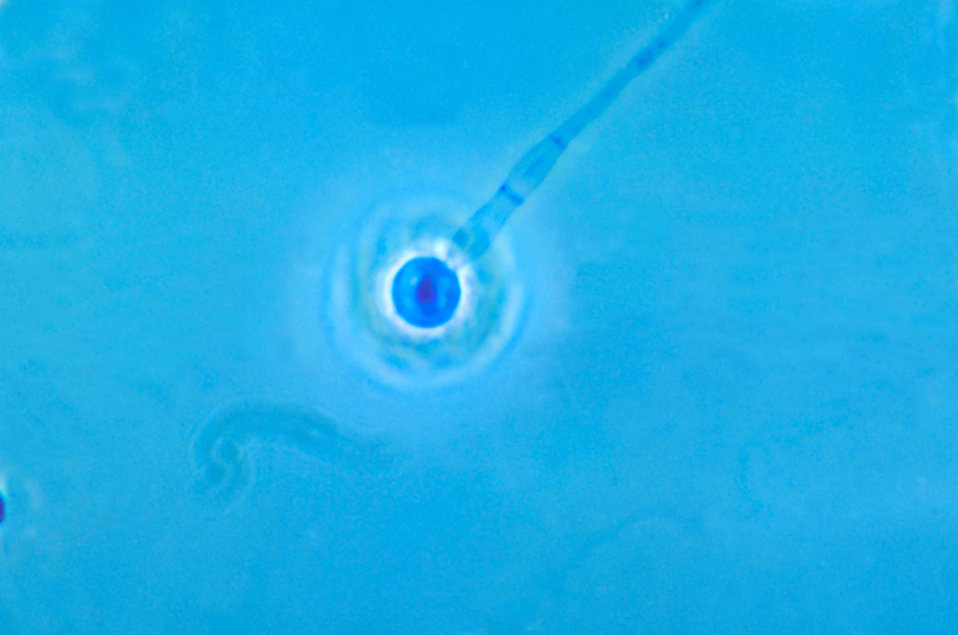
This photomicrograph reveals a conidiophore of the fungus Histoplasma capsulatum.